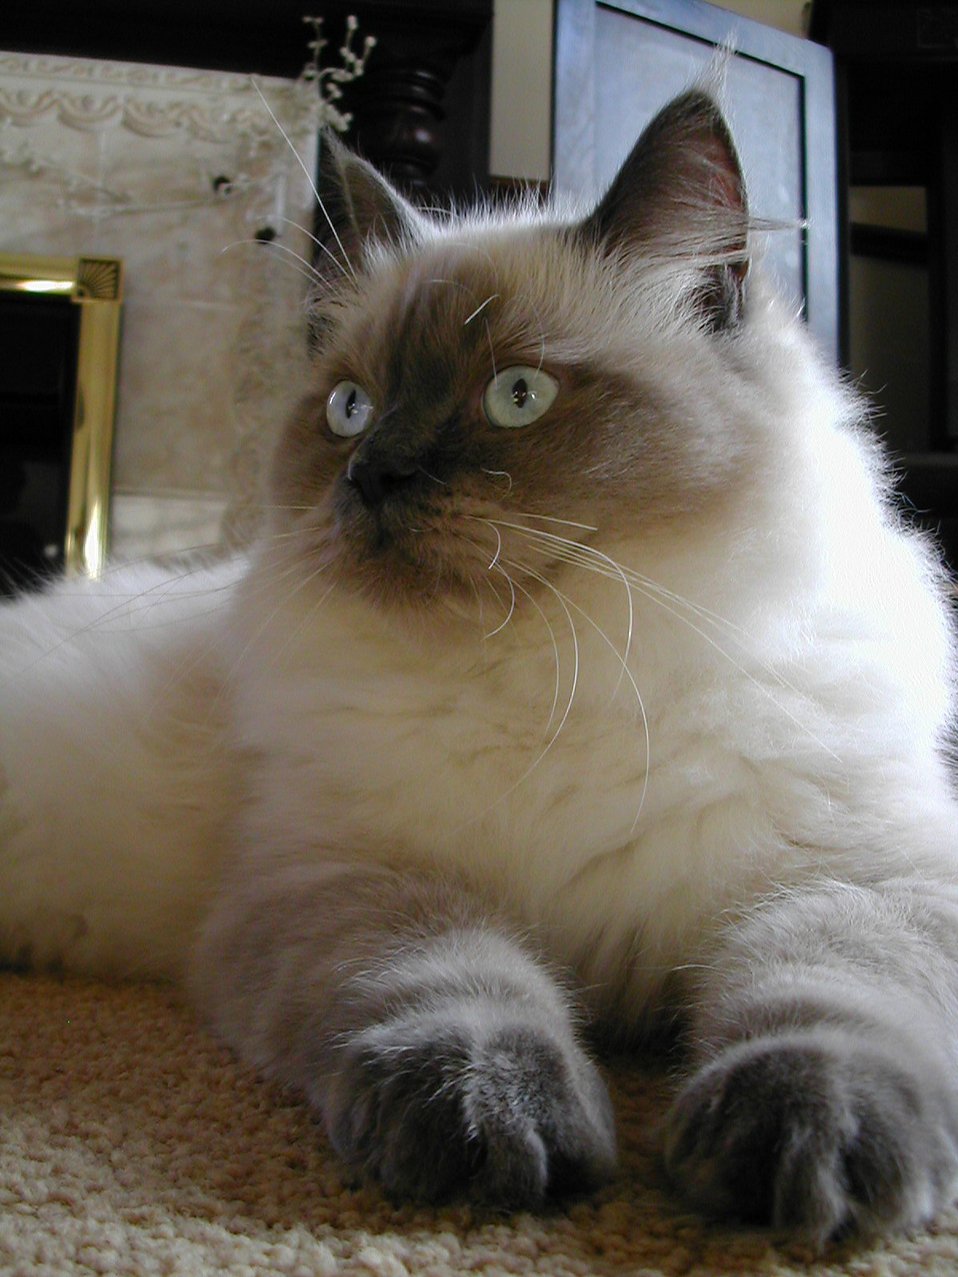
'Mork'; Ragdoll - Blue Colorpoint